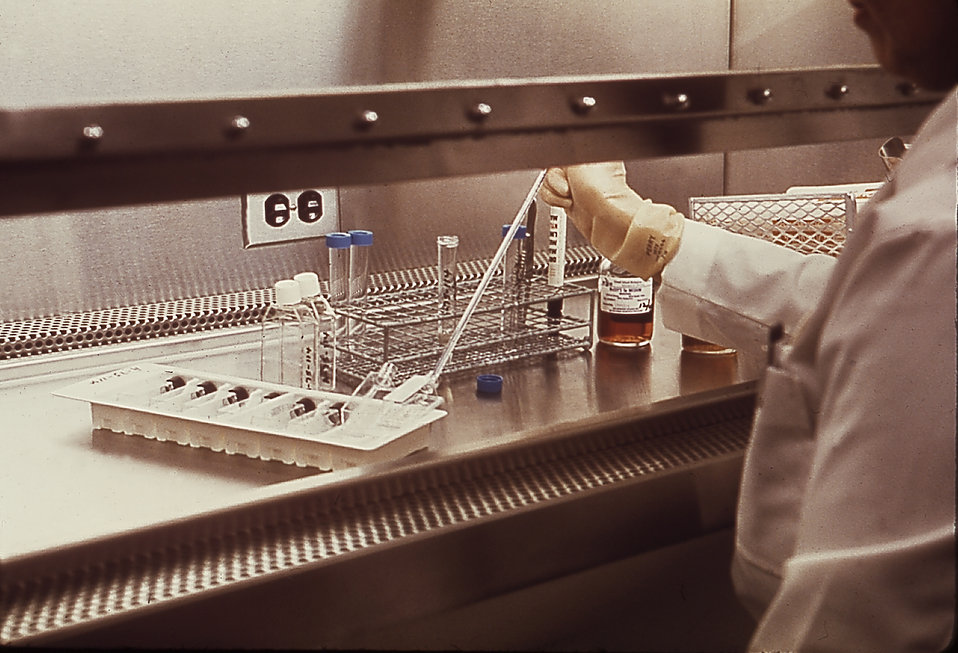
This laboratorian is pipetting sterilized amniotic fluid using a contained, sterile ventilation hood.